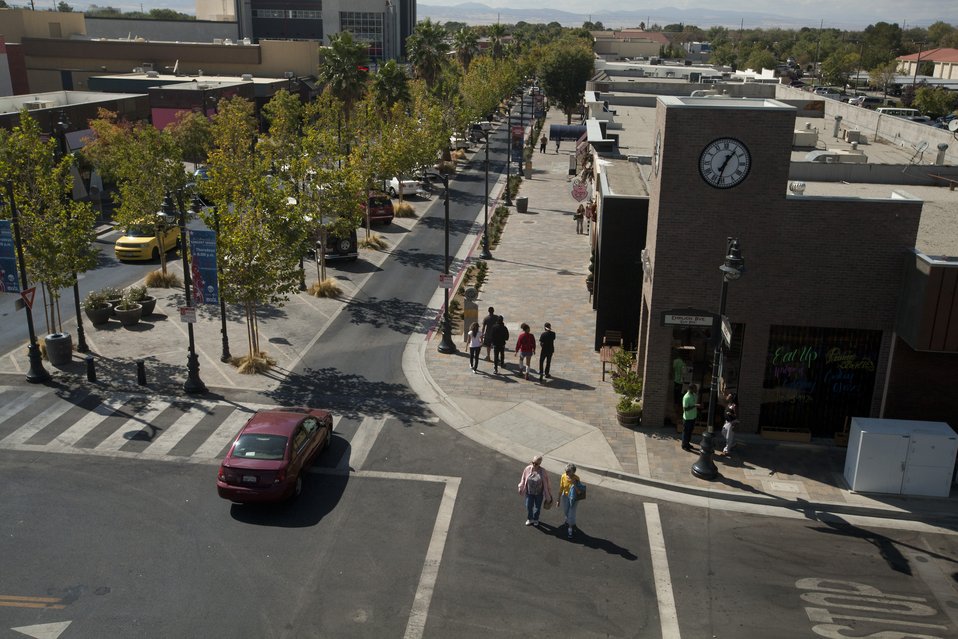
October 2012 - Overall Excellence in Smart Growth 2012: Lancaster, CA, The BLVD Transformation

The redesign of Lancaster Boulevard helped transform downtown Lancaster into a thriving residential and commercial district through investments in new streetscape design, public facilities, affordable homes, and local businesses. Dubbed “The BLVD Transformation,” this comprehensive effort engaged residents and businesses to revitalize the formerly dilapidated downtown and make it a distinctive destination. Completed after just eight months of construction, The BLVD demonstrates how redesigning a corridor guided by a strategic vision can spark new life in a community. Photo courtesy of EPA.

www.epa.gov/smartgrowth/awards/sg awards publication 2012...